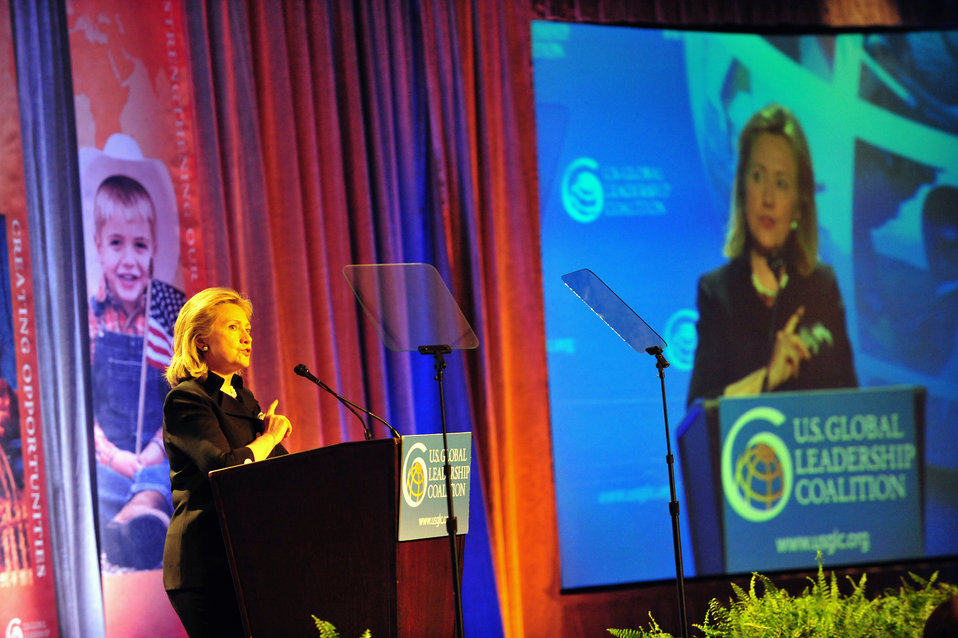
Secretary Clinton Delivers Remarks to the 2011 U.S. Global Leadership Coalition Conference

U.S. Secretary of State Hillary Rodham Clinton delivers remarks to the 2011 U.S. Global Leadership Coalition (USGLC) Conference, at the Grant Hyatt Hotel in Washington, D.C., on July 12, 2011.